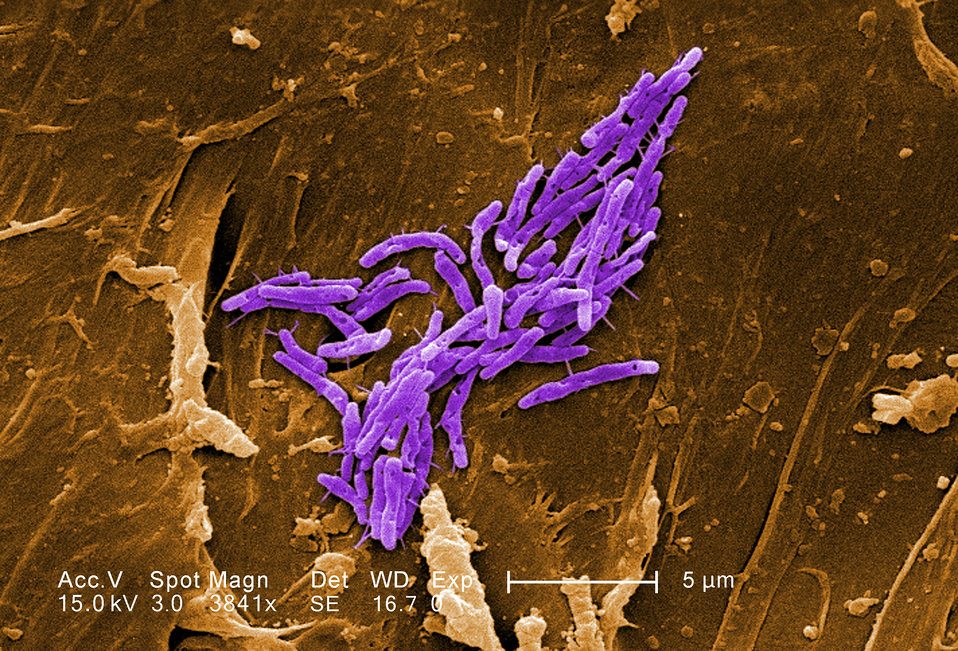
Under a magnification of 3841X, this scanning electron micrograph SEM) revealed some of the ultrastructural morphologic details exhibited by a number of Gram-positive bacilli, or 'rod-shaped', Mycobacterium fortuitum bacteria. See PHIL 11032 for a black and white version of this image.